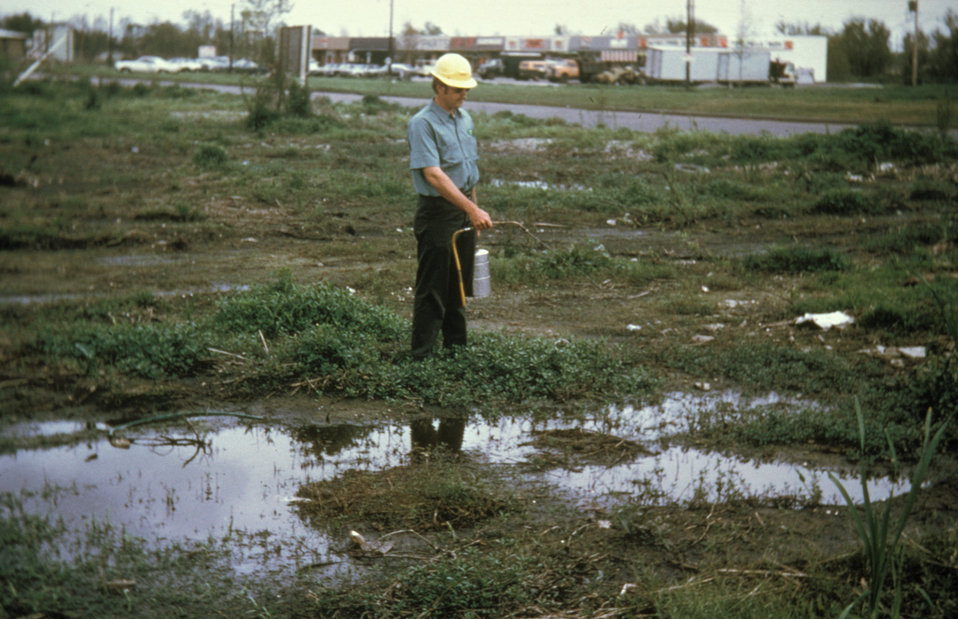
This photograph shows a man using a hand-carried compressed air sprayer apply 'larviciding' oil to mosquito breeding pools.